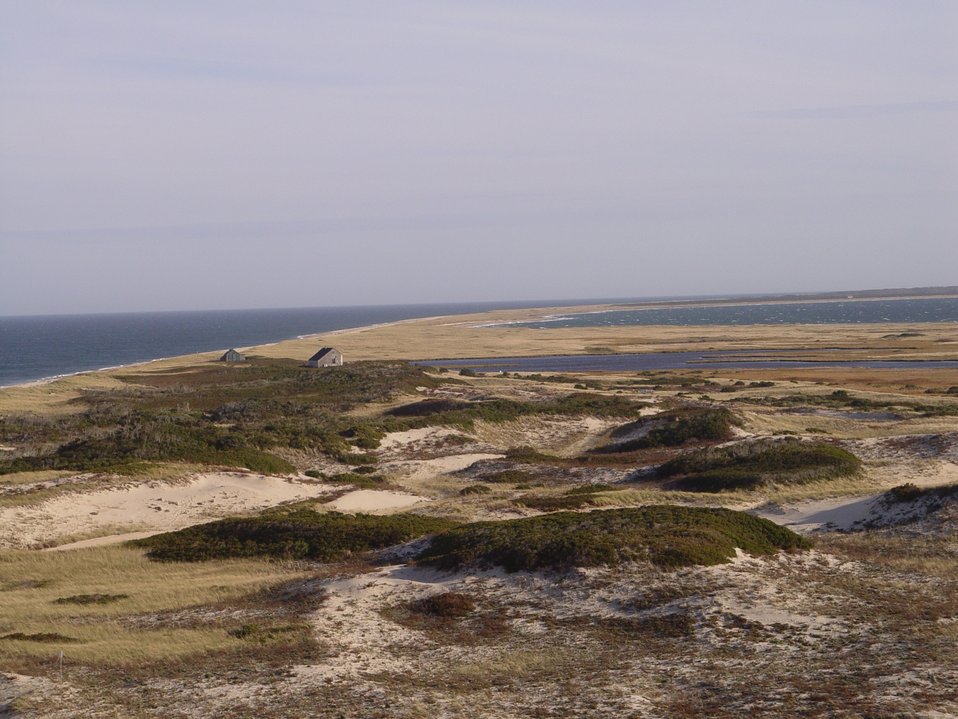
Beach

Nantucket National Wildlife Refuge, MA.